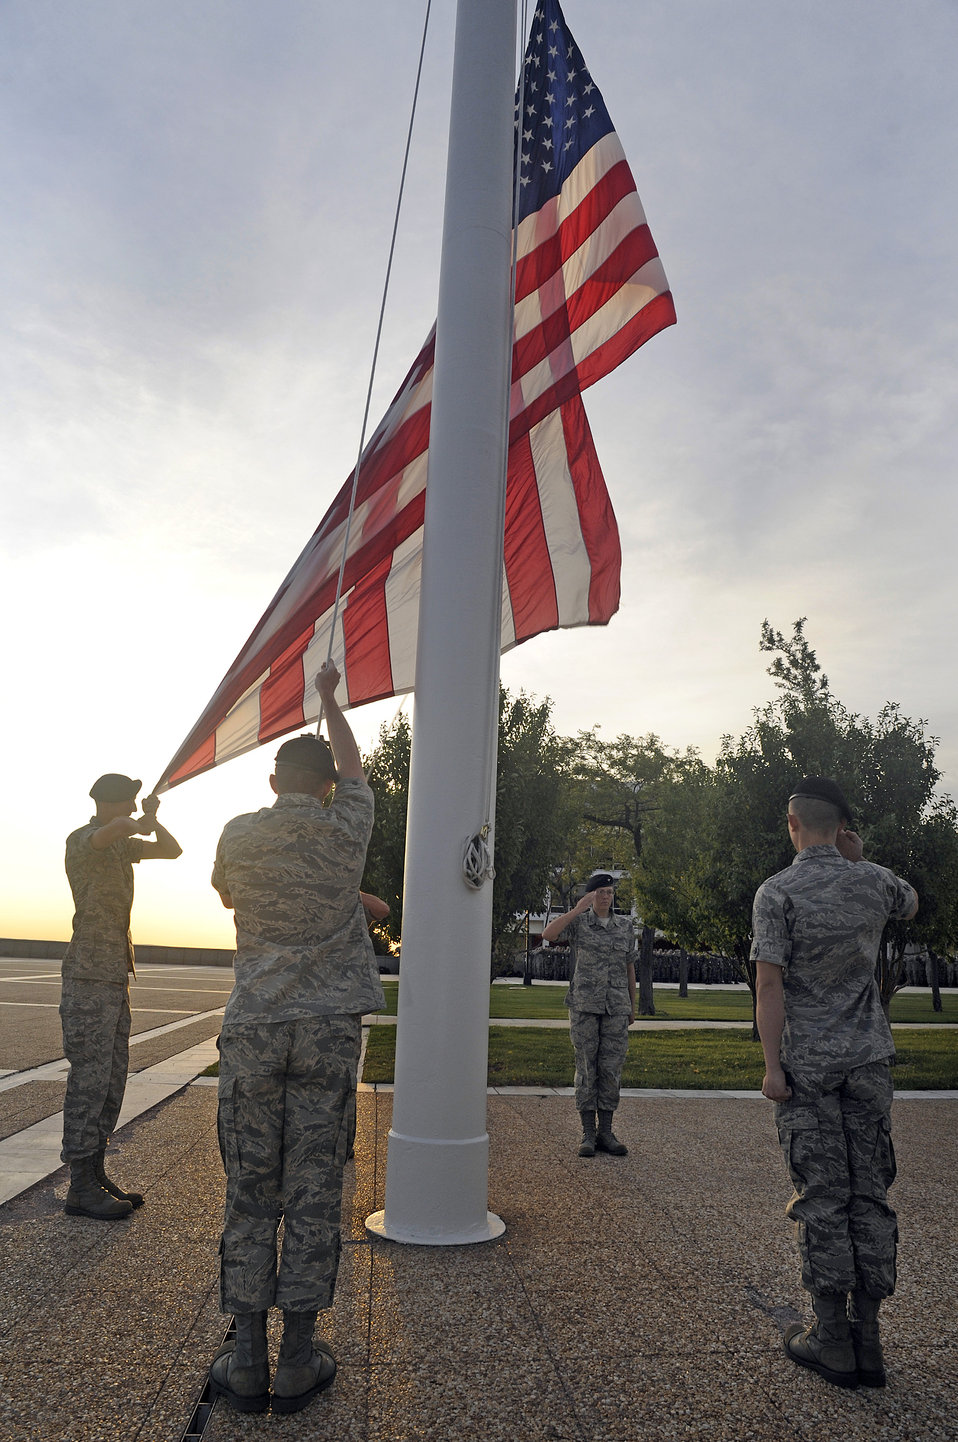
Reveille Ceremony

The cadet flag detail raises the American flag during a reveille formation in honor of Patriot's Day and the Fallen Heroes of 9/11 on Sept. 11, 2009, at U.S. Air Force Academy, Colo.